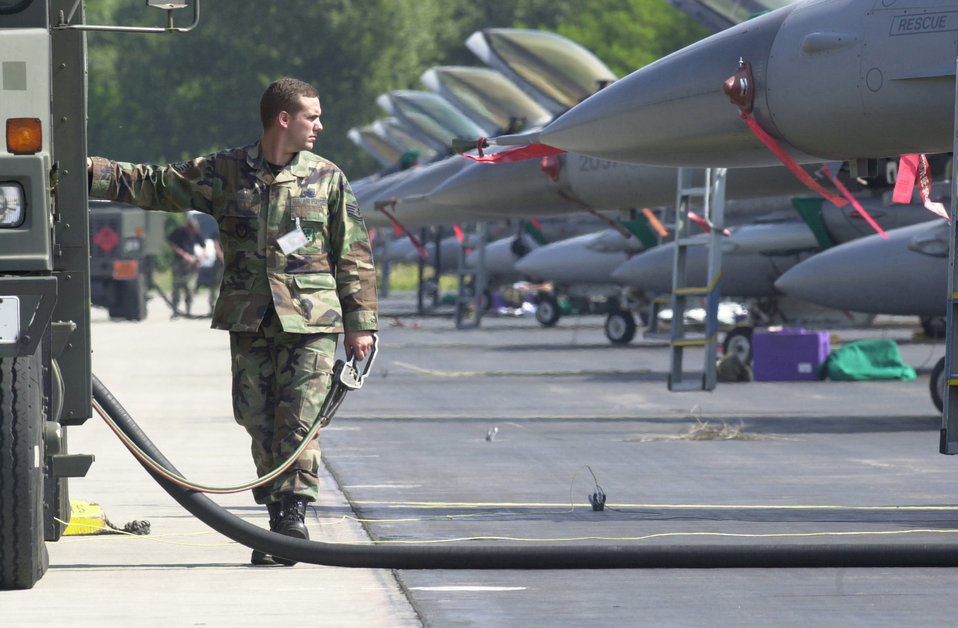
Refueling

MALACKY AIR BASE, Slovakia -- Staff Sgt. William LeSage, 31st Supply Squadron, Fuels Flight, Aviano Air Base, Italy, refuels an F-16 Fighting Falcon between sorties. He's one of 220 people deployed to support the 555th Fighter Squadron during a weapons training deployment here.